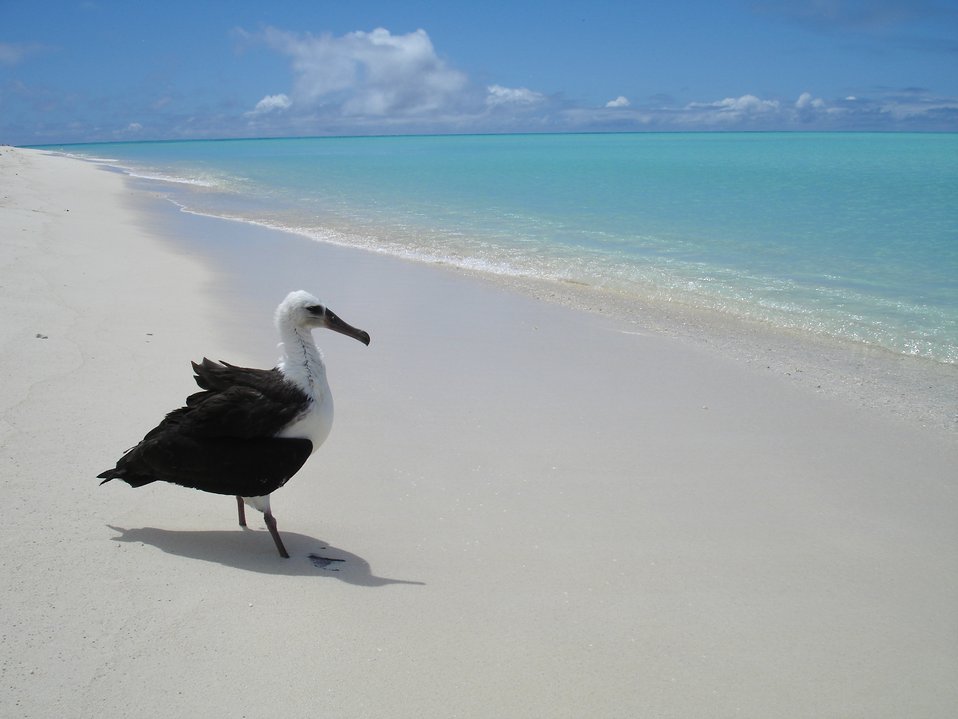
A Laysan albatross contemplating the ocean